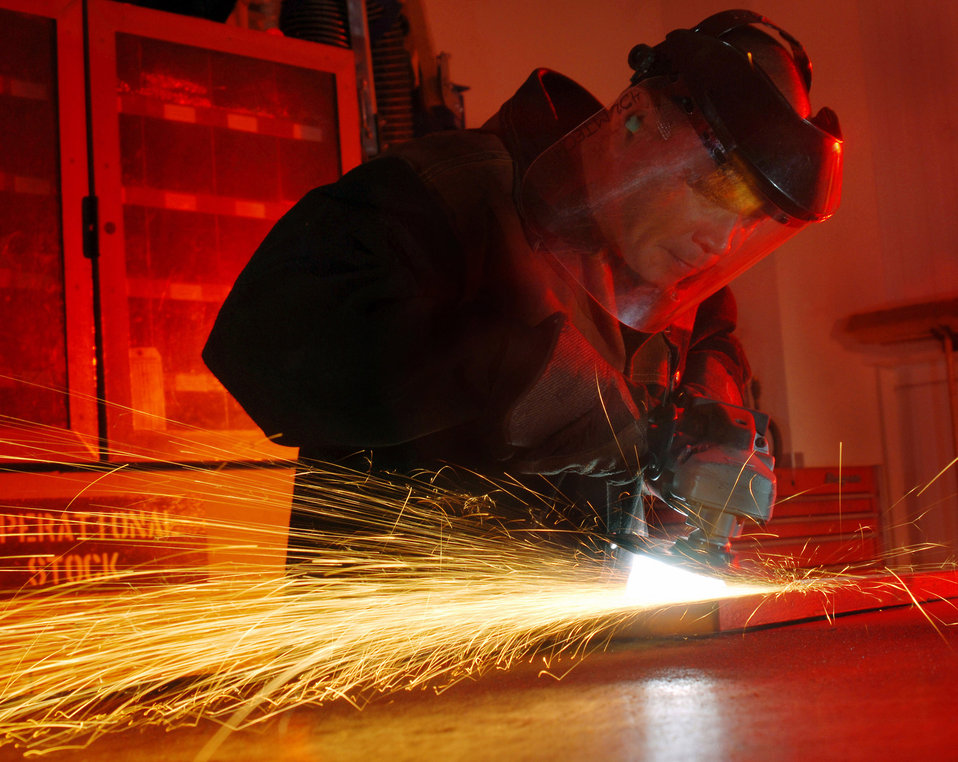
A spark-ling atmosphere

Tech. Sgt. Percy Padilla uses a grinder to shape a metal part Sept. 17at March Air Reserve Base, Calif. He is a metals technician from the 452nd Maintenance Squadron here.